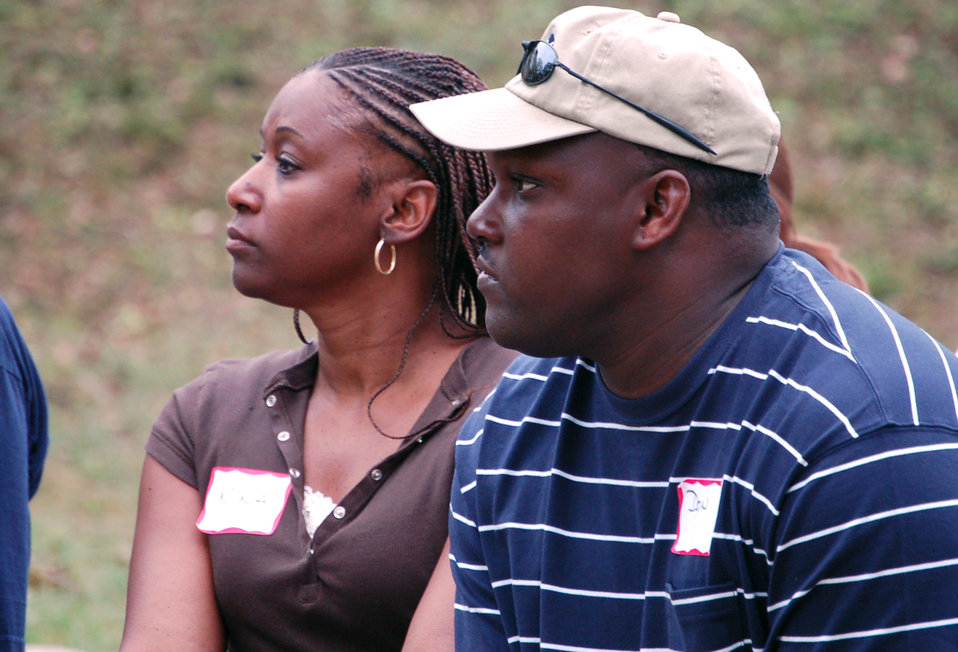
Retreat comes right on time

Nina and Master Sgt. Don Taylor take part in a retreat in Hunt, Texas, on April 22, 2006, that helps couples reconnect after the military spouse returns from a deployment. The couple, from Seymour Johnson Air Force Base, N.C., attended the retreat April 20 to 27 hosted by the Military, Veteran and Family Assistance Foundation.